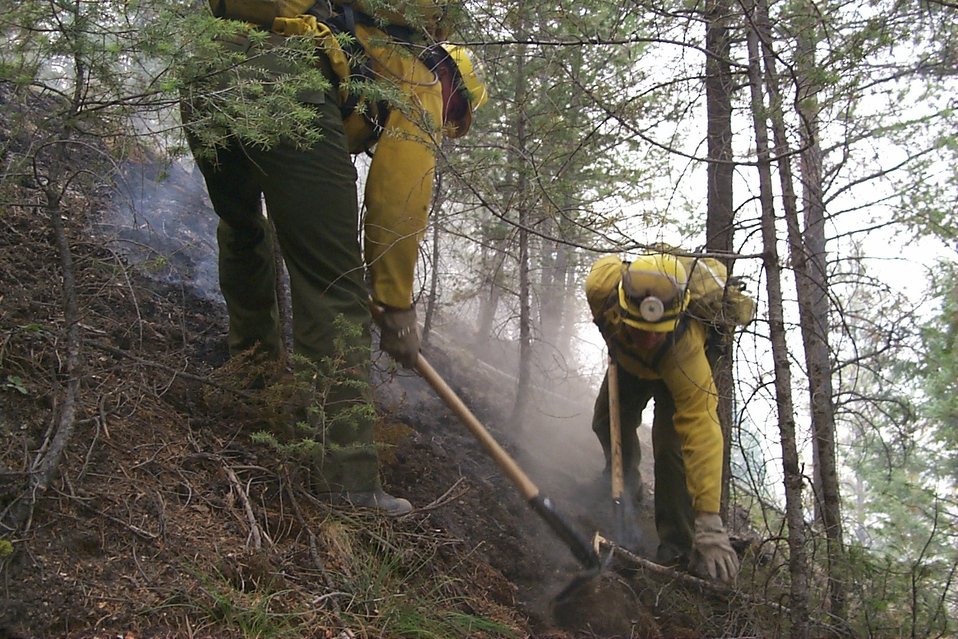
Line crew Fire Clearwater Fire Salmon Field Office USRD Upper Snake River District